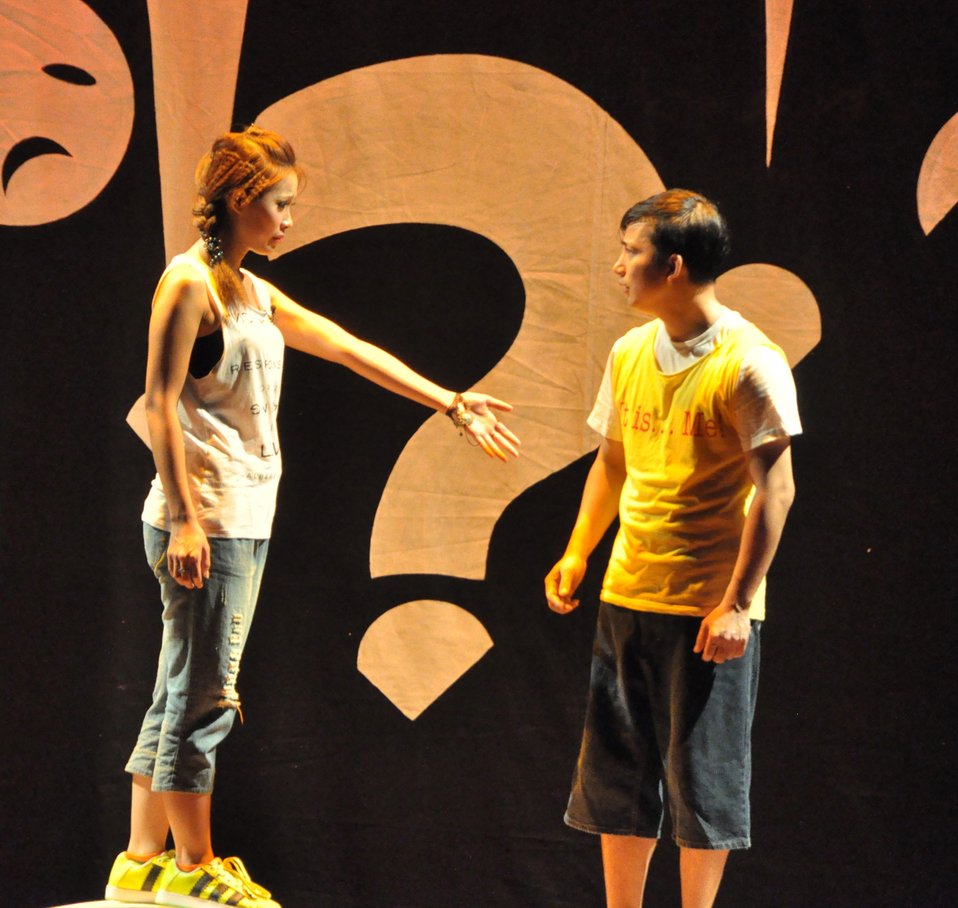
PEPFAR Musical Questions and Exclamations

Hanoi, May 17, 2013